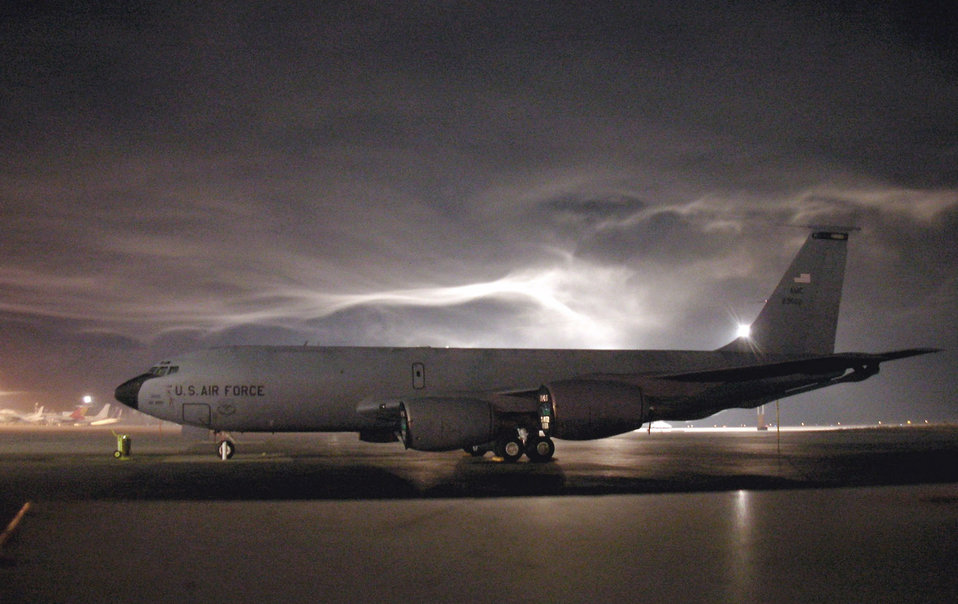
Oct. 16 airpower summary: Tankers continue to fuel the fight

A KC-135 Stratotanker sits on the flightline at a base in Southwest Asia. Air Force and coalition tankers flew 53 sorties and off-loaded approximately 3.3 million pounds of fuel Oct.15.